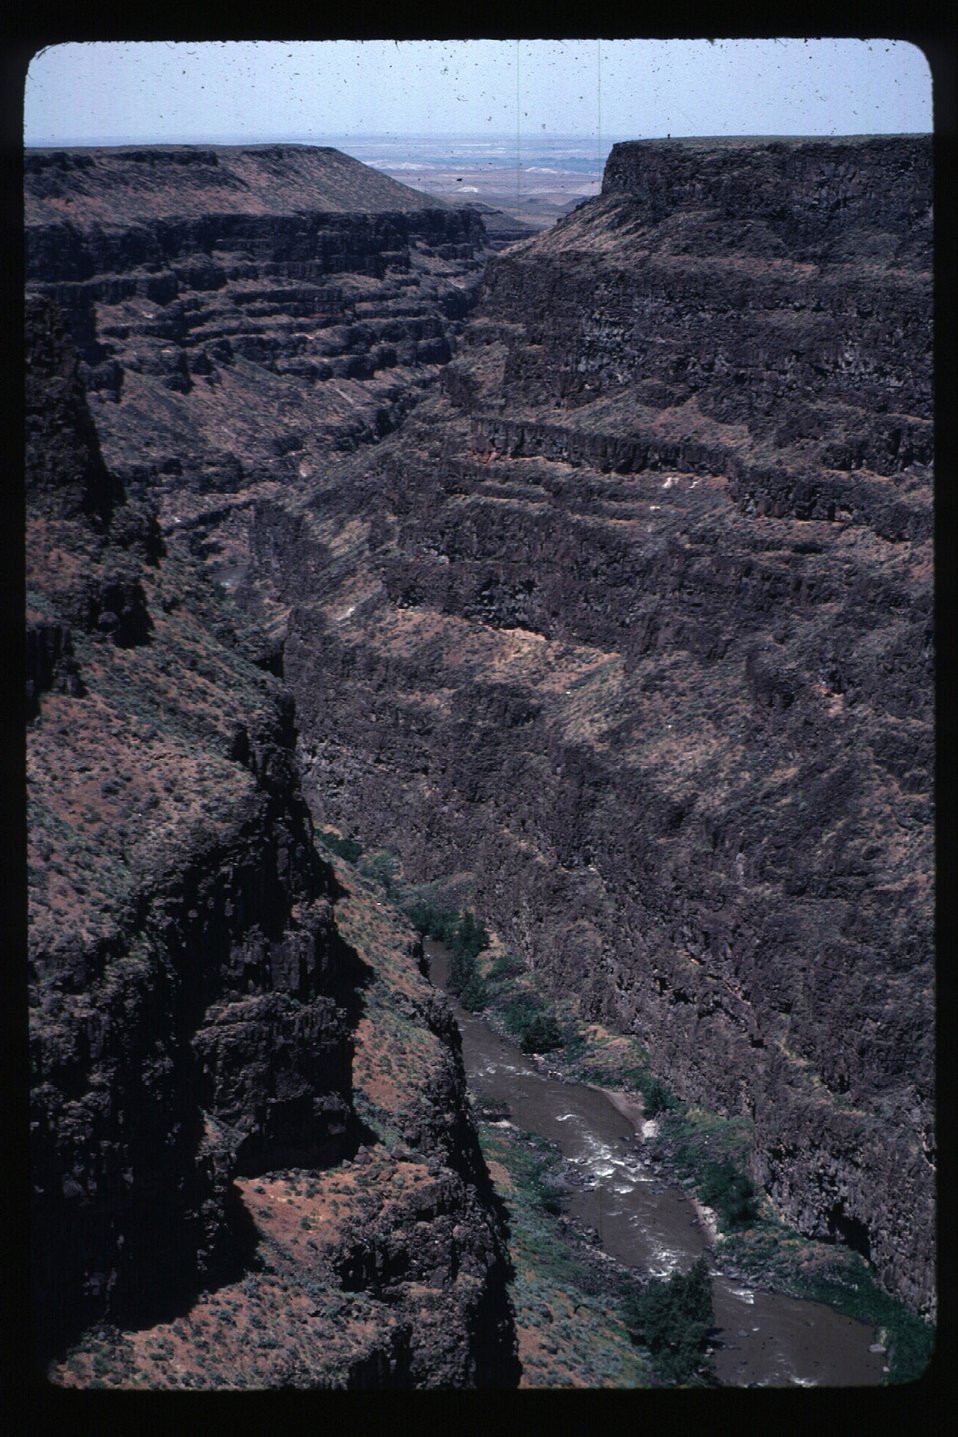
Scenic Bruneau River Overlook Owyhee Field Office LSRD Lower Snake River District